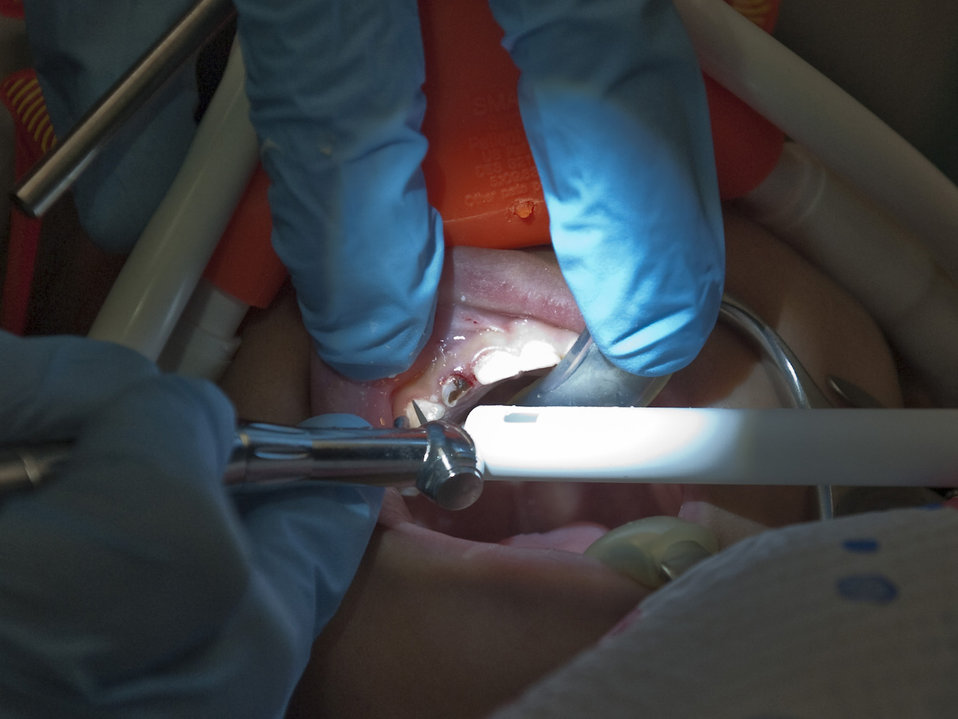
Guard, active-duty Airmen provide dental care to remote Alaskan village

Maj. Blake Moore prepares a dam during a pediatric dental procedure April 15, 2010, at Kotzebue, Alaska. The major deployed to Alaska in support of Operation Arctic Care, a joint innovative readiness training exercise. Major Moore is a dentist deployed from Elmendorf Air Force Base, Alaska.